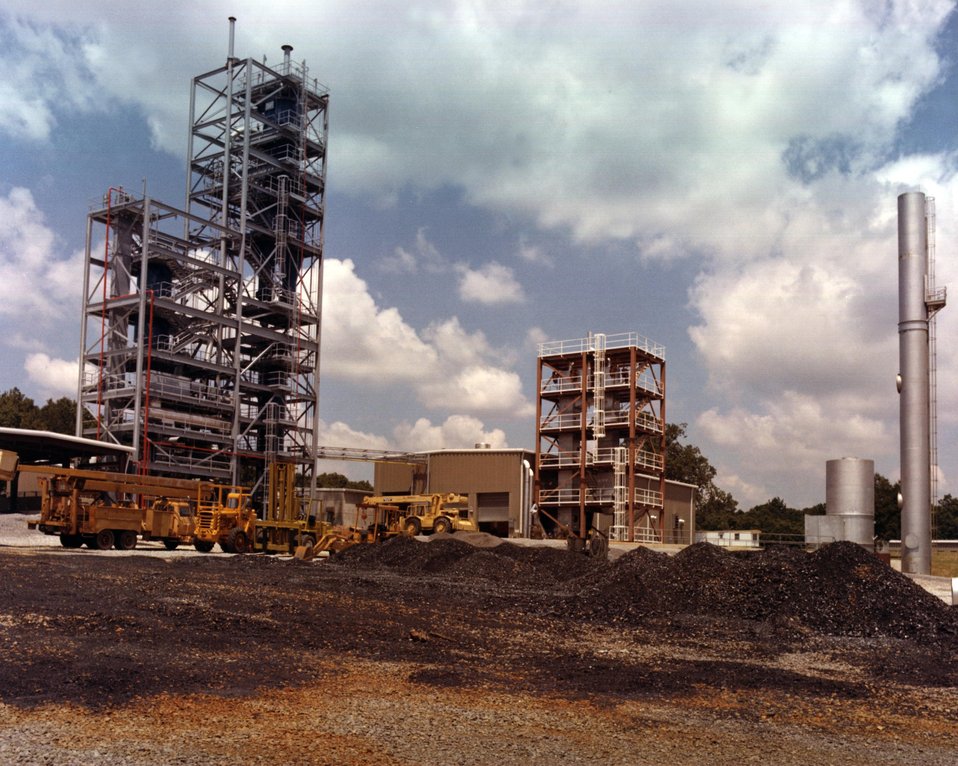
CFFF MHD FACILITY WITH COAL FEED/PROCESS SYSTEM, LEFT, SLAGGING FURNACE STRUCTURES, CENTER, FACILITY STACK, RIGHT.

IN THIS SYSTEM, COAL IS BURNED TO PRODUCE ELECTRICITY WHILE IT ALSO REMOVES THE SULFUR FROM THE COAL. COAL BURNS AT A HIGH TEMPERATURE (4,000 DEGREES F.) AND FORMS A HOT GAS TO WHICH A SALT IS ADDED THEREBY IMPROVING THE ELECTRICAL CONDUCTIVITY. AT A HIGH SPEED, THE GAS FLOWS THROUGH A MAGNETIC FIELD CREATING AN ELECTRIC CURRENT. ELECTRODES, PRESENT IN THE CHAMBER, COLLECT THIS CURRENT AND TRANSFER IT THROUGH THE INVERTER TO THE UTILITY POWER GRID.